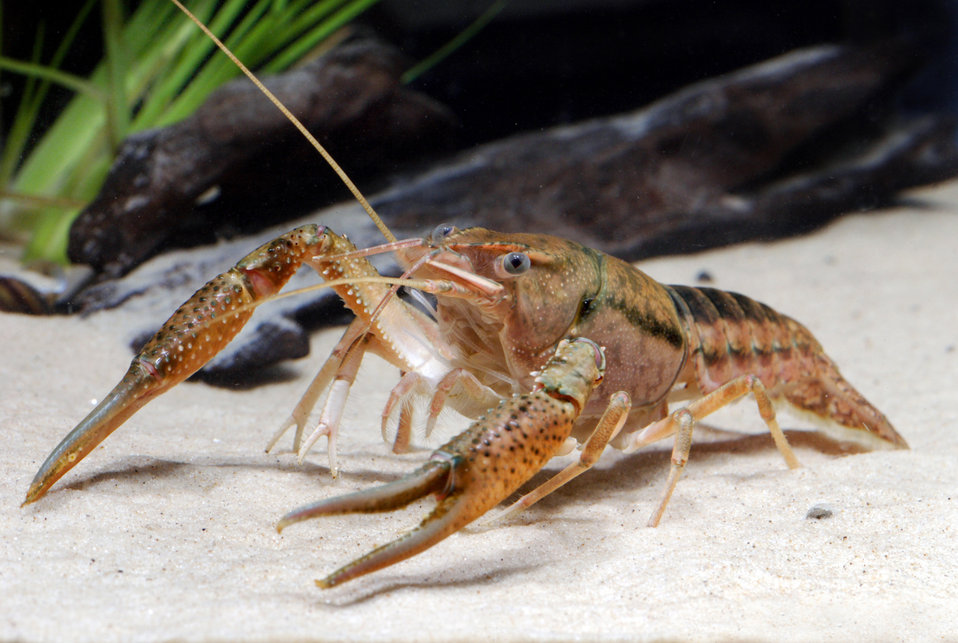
Crayfish2

Crayfish, like this Procambarus hayi are freshwater crustaceans, and live in rivers and streams.